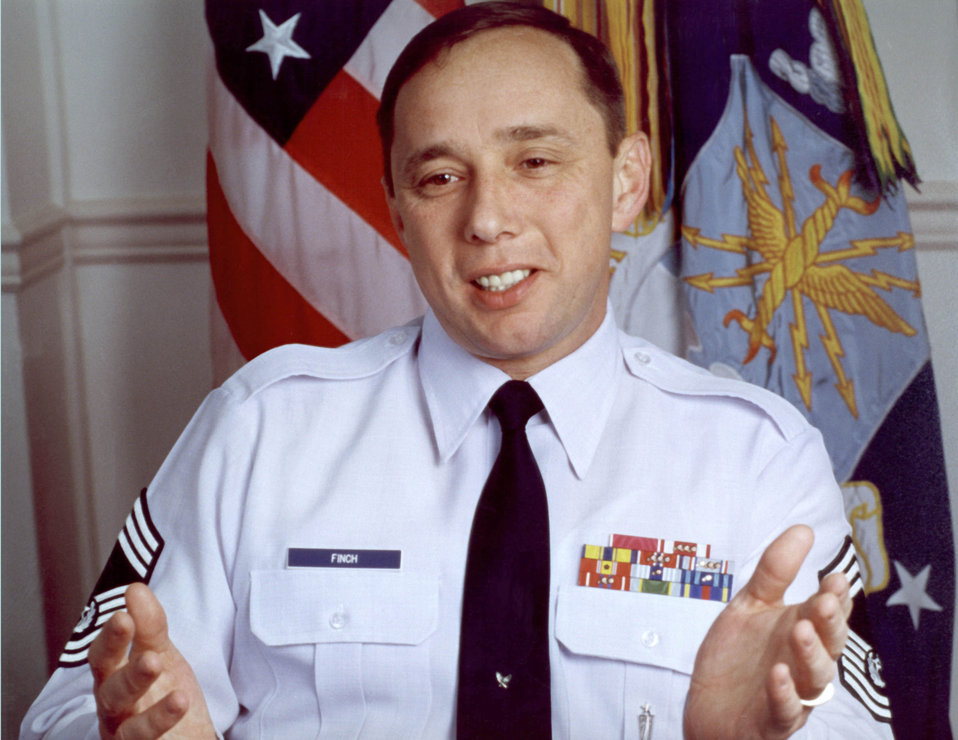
CMSAF Fredrick Jim Finch

1970's -- Chief Master Sergeant of the Air Force Jim Finch was adviser to the chief of staff and the secretary of the U.S. Air Force on matters concerning the effective utilization, welfare and progress of the enlisted members of the Air Force. He was the 13th chief master sergeant appointed to the highest noncommissioned officer position.